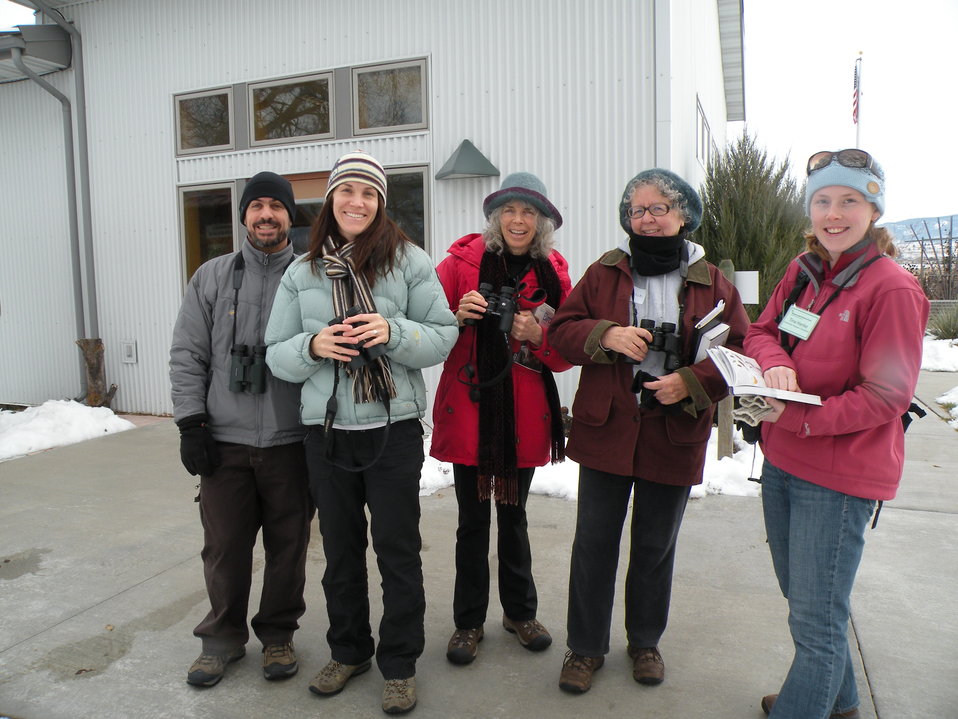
Birding Group

Montana Natural History Center led a birding group (portion of which are in photo) on Lee Metcalf National Wildlife Refuge.